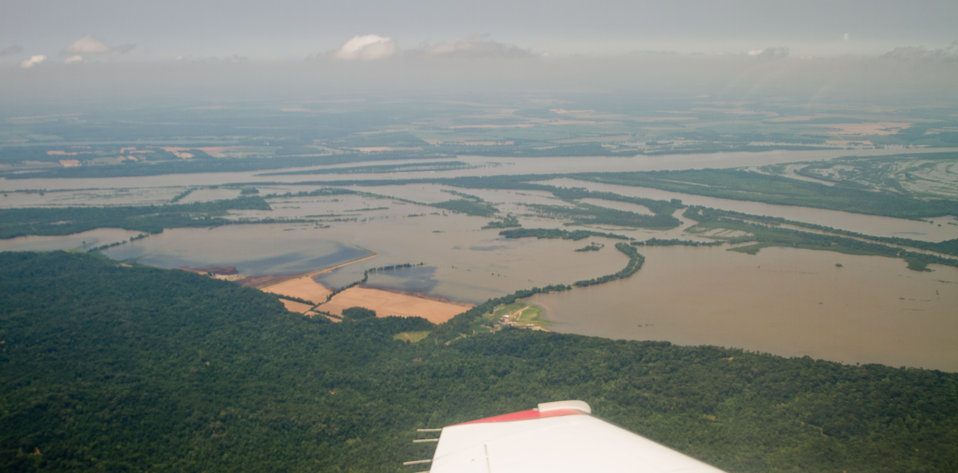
Onboard a King Air aircraft at the 12,000 feet altitude to get a broad view of flooding, on Thursday, May 19, 2011. The flight are to observe different regions of crop condition, water seepage and inundation along the Mississippi river.